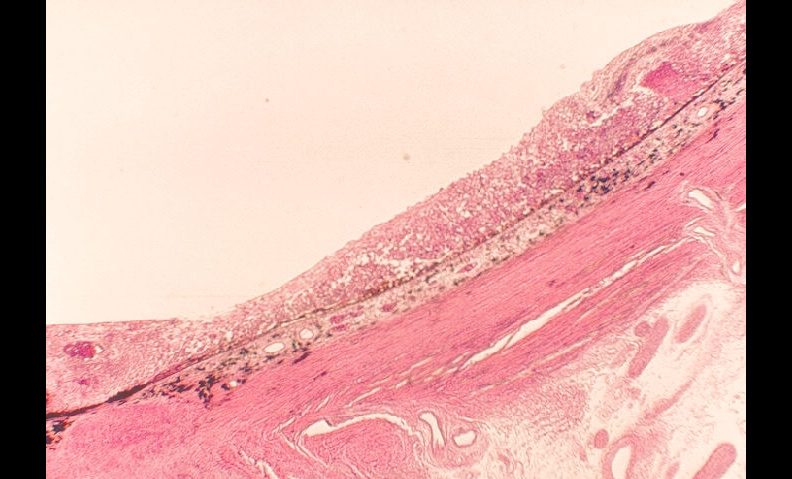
Histopathology of cytomegalovirus infection of eye.